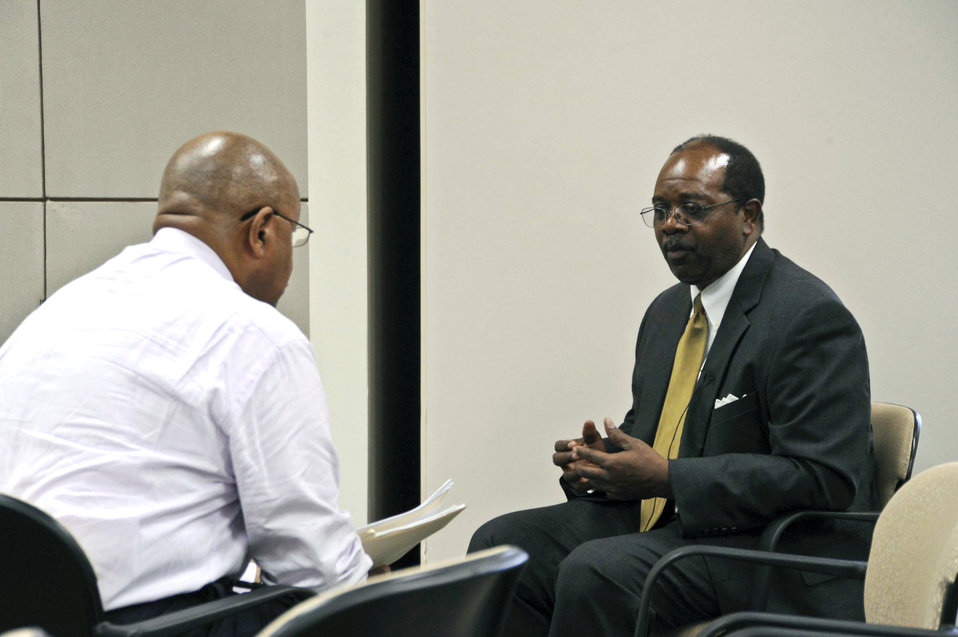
Former U.S. Department of Agriculture (USDA) Animal and Plant Heatlth Inspection Service (APHIS) Administrator Terry Medley (1996-1998) is interviewed as part of the APHIS 40th Anniversary celebration activities on May 16, 2012.